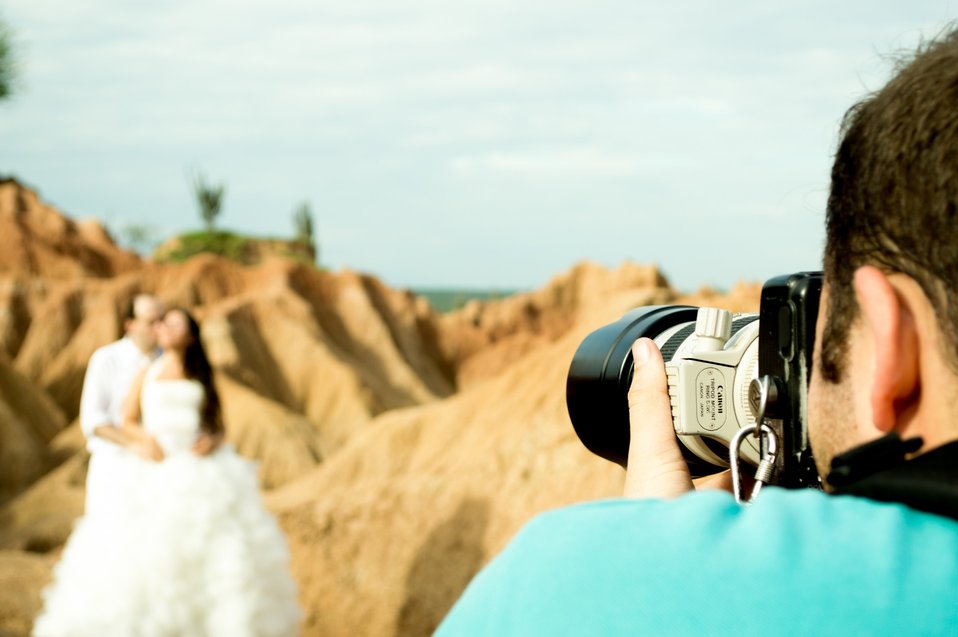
Wedding photographer

A french photographer was in a colombian desert to take a after wedding pictures at south of colombia.